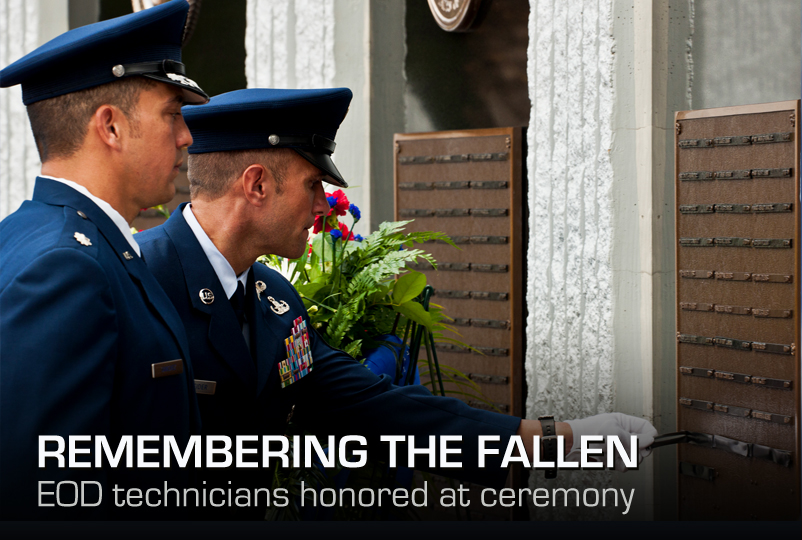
Remembering the Fallen

U.S. Air Force graphic/Corey Parrish, photo/Samuel King Jr.)